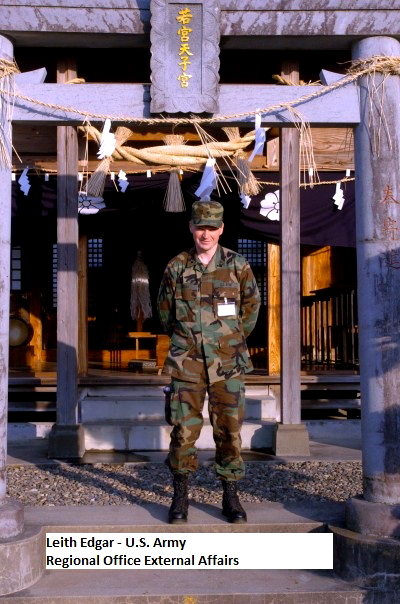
Leith Edgar of Region 6 External Affairs served in the Army.